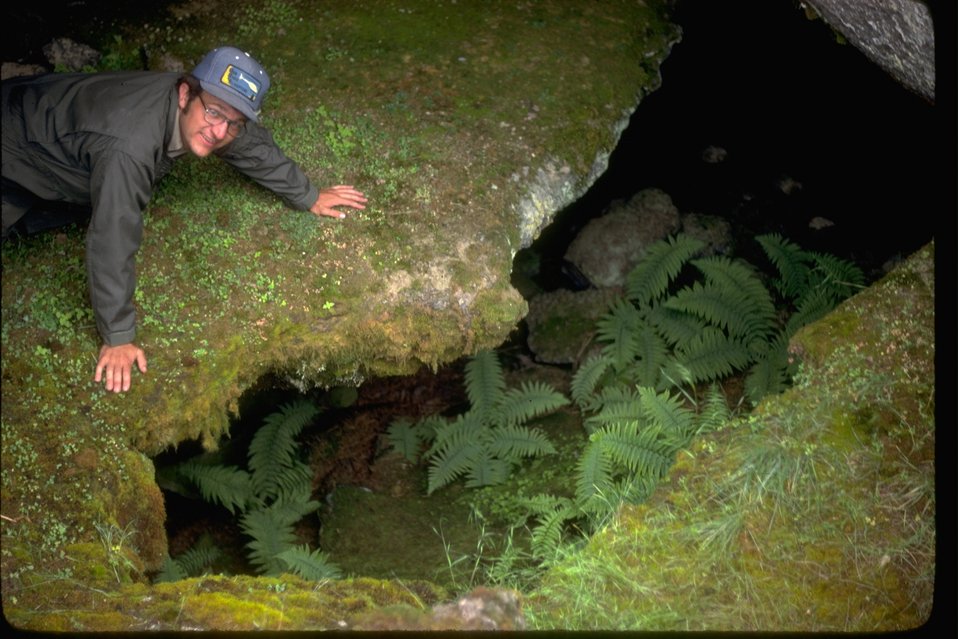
Person looking into a lava tube opening with ferns growing inside at Clarks Butte Wilderness Study Area. OR 3-120